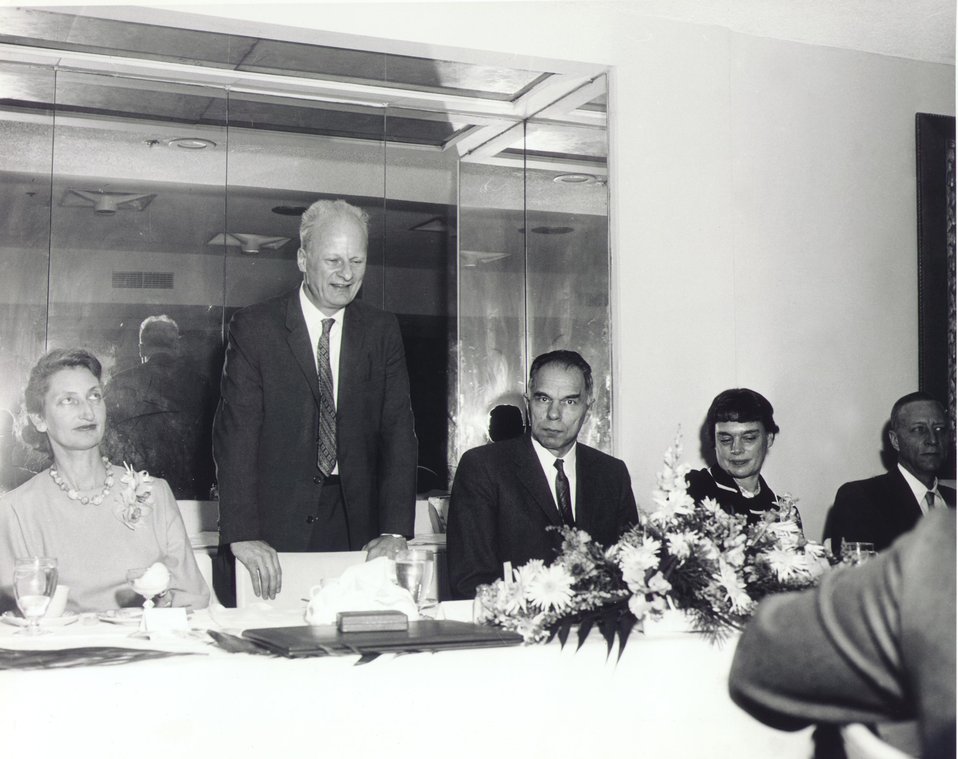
Fermi Award Ceremony & luncheon for Dr. Bethe in Washington on Dec. 1, 1961.